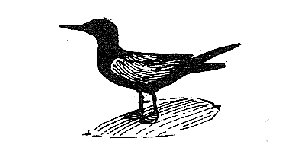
Black tern

Bob Hines illustration of a black tern.